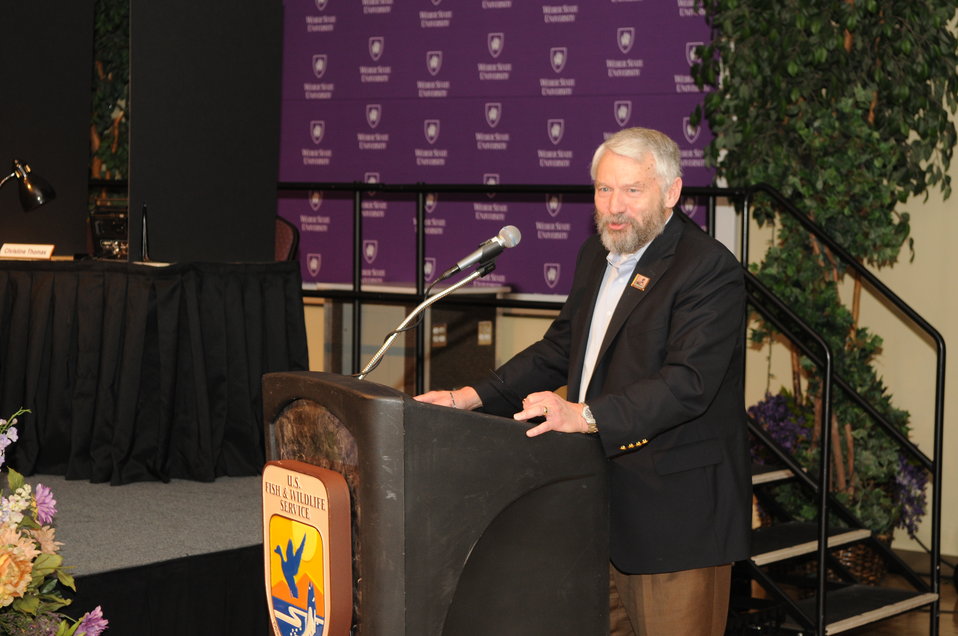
Opening Remarks

The U.S. Fish & Wildlife Service sponsored the 2012 Federal Duck Stamp Art Contest September 28 and 29 in Ogden, Utah, at Weber State University. A panel of five judges was responsible for choosing the art work used to design the 2013-2014 Migratory Bird Hunting and Conservation Stamp.